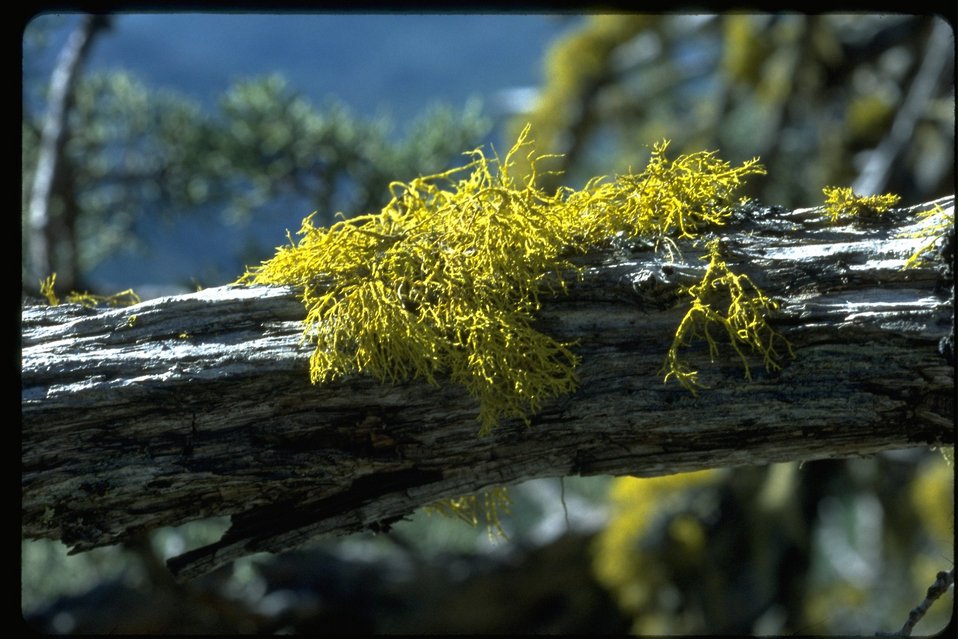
Medium shot of moss on old Juniper.